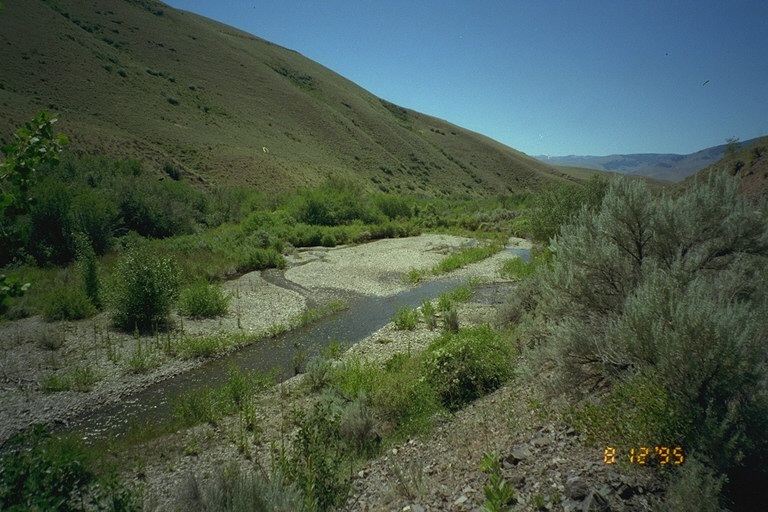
Riparian area Public Lands Salmon Field Office UCSC Upper Columbia Salmon Clearwater District